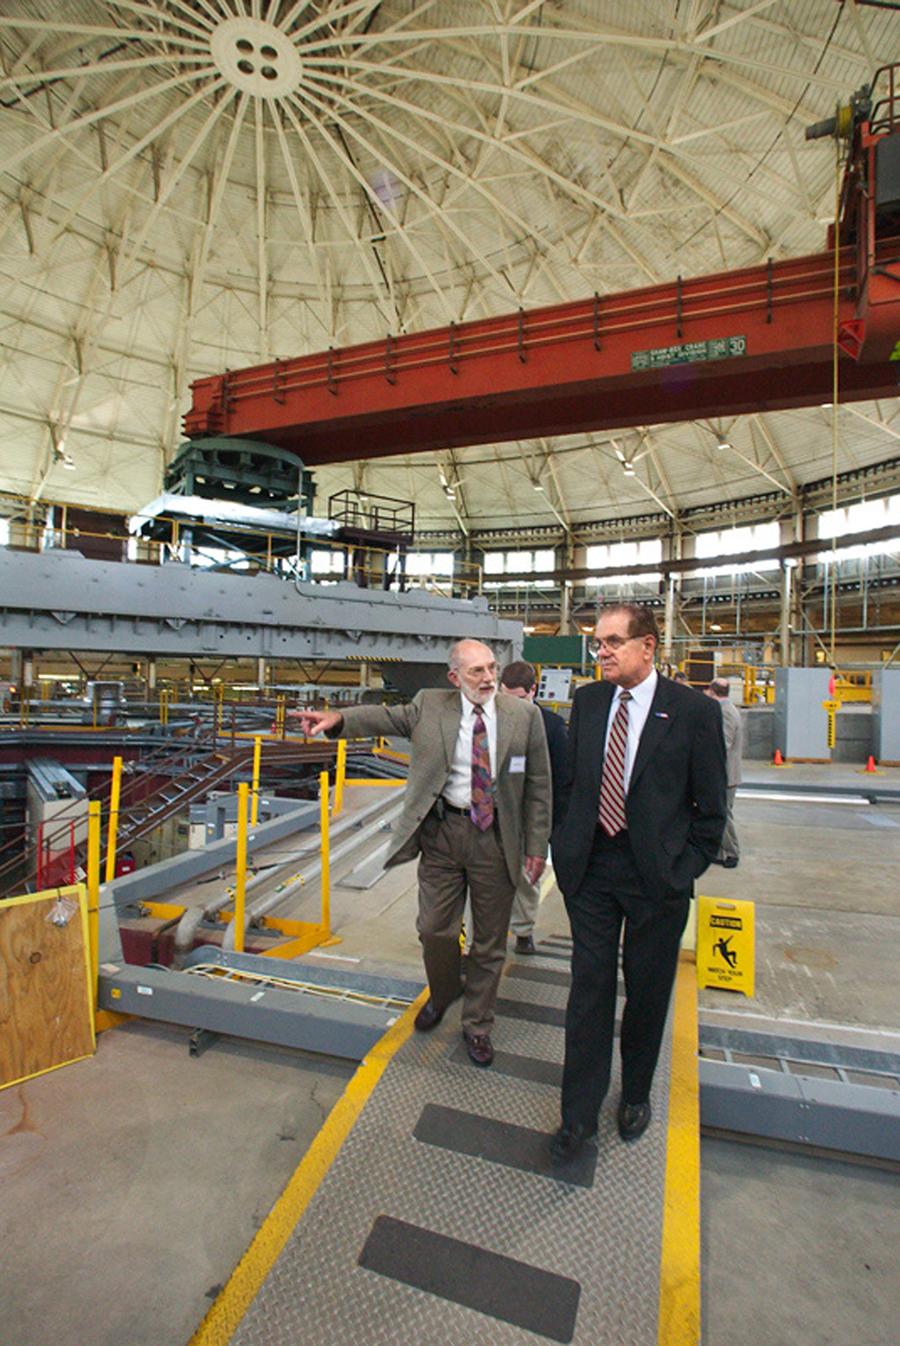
DR. RAYMOND ORBACH, DIRECTOR, OFFICE OF SCIENCE, SPEAKS WITH JANOS KIRZ, THE ACTING DIRECTOR OF THE ADVANCED LIGHT SOURCE AT LAWRENCE BERKELEY NATIONAL LABORATORY.

LBNL'S ADVANCED LIGHT SOURCE IS A NATIONAL USER FACILITY THAT GENERATES INTENSE LIGHT FOR SCIENTIFIC AND TECHNOLOGICAL RESEARCH. AS ON OF THE WORLD'S BRIGHTEST SOURCES OF ULTRAVIOLET AND SOFT X-RAY BEAMS AND THE WORLD'S FIRST THIRD GENERATION SYNCHROTRON LIGHT SOURCE IN ITS ENERGY RANGE, THE ALS MAKES PREVIOUSLY IMPOSSIBLE STUDIES POSSIBLE. THE FACILITY WELCOMES RESEARCHERS FROM UNIVERSITIES, INDUSTRIES AND GOVERNMENT LABORATORIES WORLD WIDE.